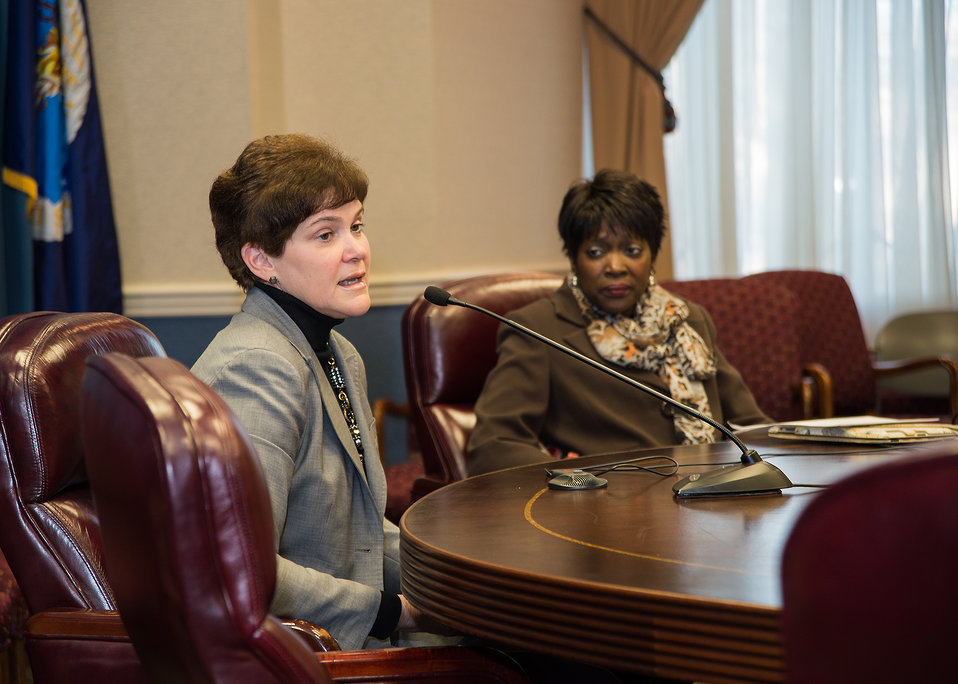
Agriculture Deputy Secretary Krysta Harden speaks to questions posed by students of the Hispanic Association of Colleges and Universities (HACU) National Internship Program Fall 2014 Interns during the Pathways Programs for Students and Recent Graduates to Federal Careers program at the U.S. Department of Agriculture (USDA) on Tuesday, Dec. 3, 2013 in Washington, D.C.